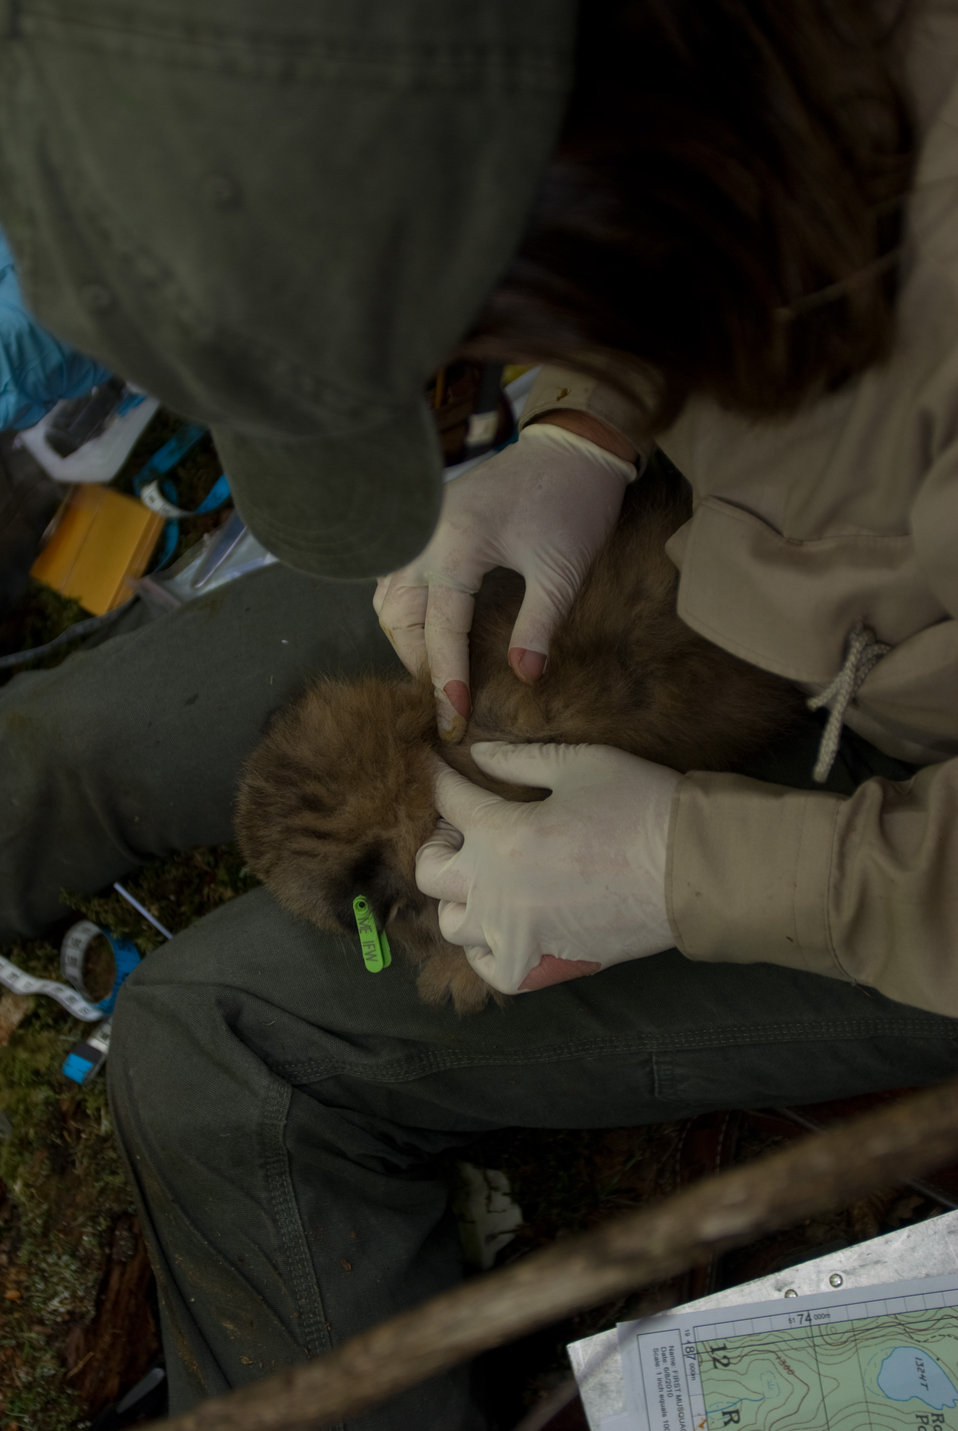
RFID tagging

A wildlife biologists tags finds an appropriate location on the back of a lynx kitten for an RFID implant which will allow for future recollection of this lynx's habitat and behavior.